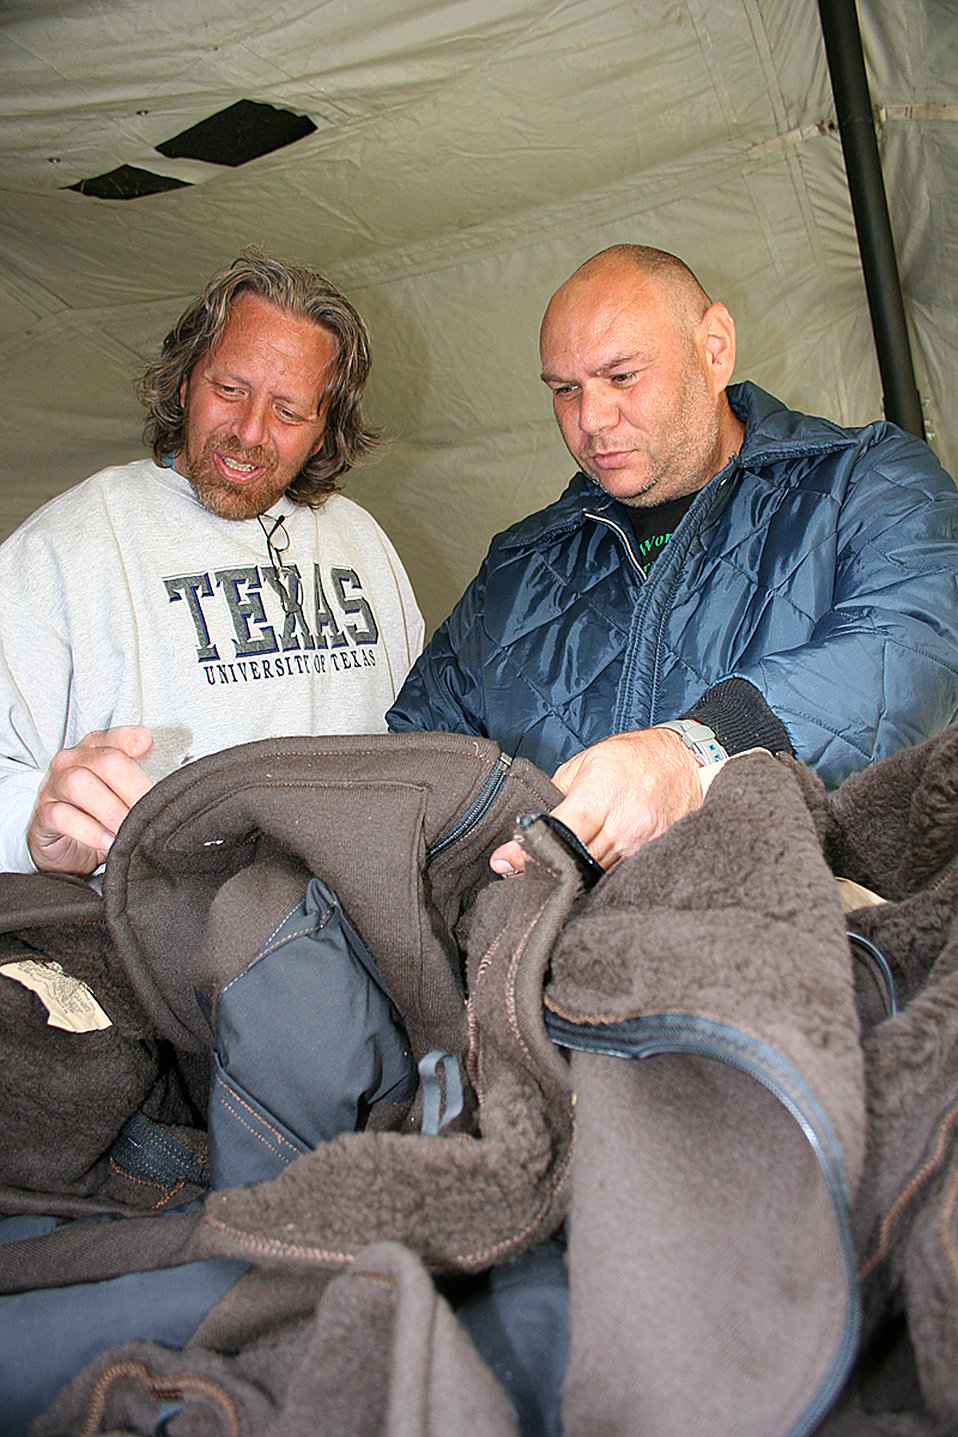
Helping the homeless

Two homeless men look for warm clothes and jackets at the Wichita Stand Down for Homeless Veterans. Even non-veterans were given an open invitation to take what they needed at the event, which was assisted by Airmen from McConnell Air Force Base, Kan., and members of the Department of Veterans Affairs.